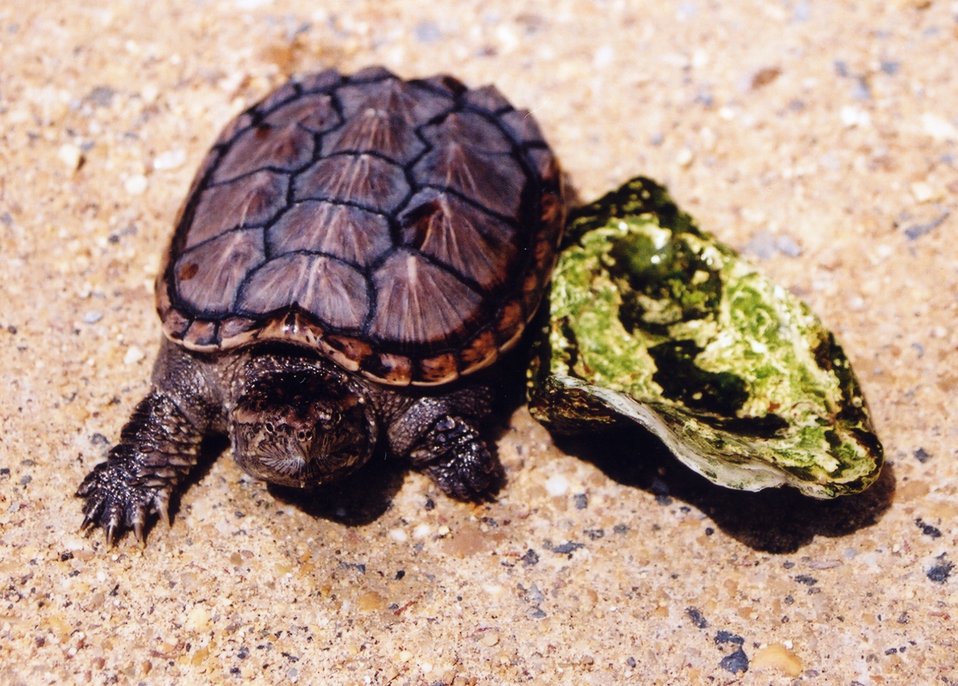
A year-old snapping turtle, about the same size as an oyster shell.